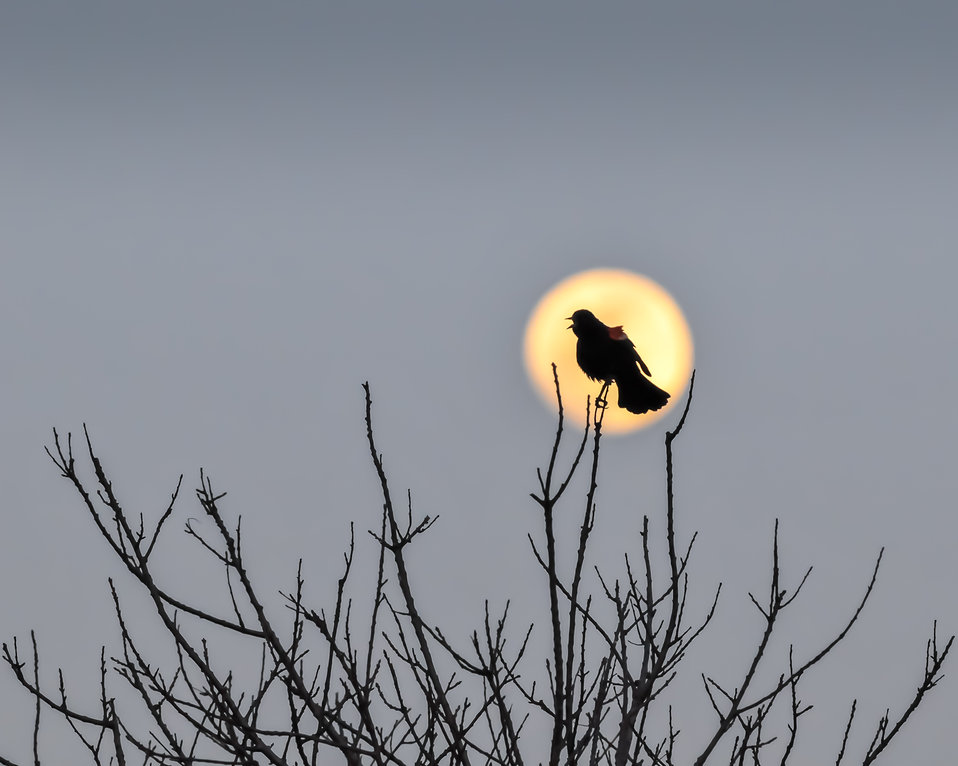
Red-winged blackbird by Don Freiday

Red-winged blackbird photographed at Edwin B. Forsythe National Wildlife Refuge by Don Freiday